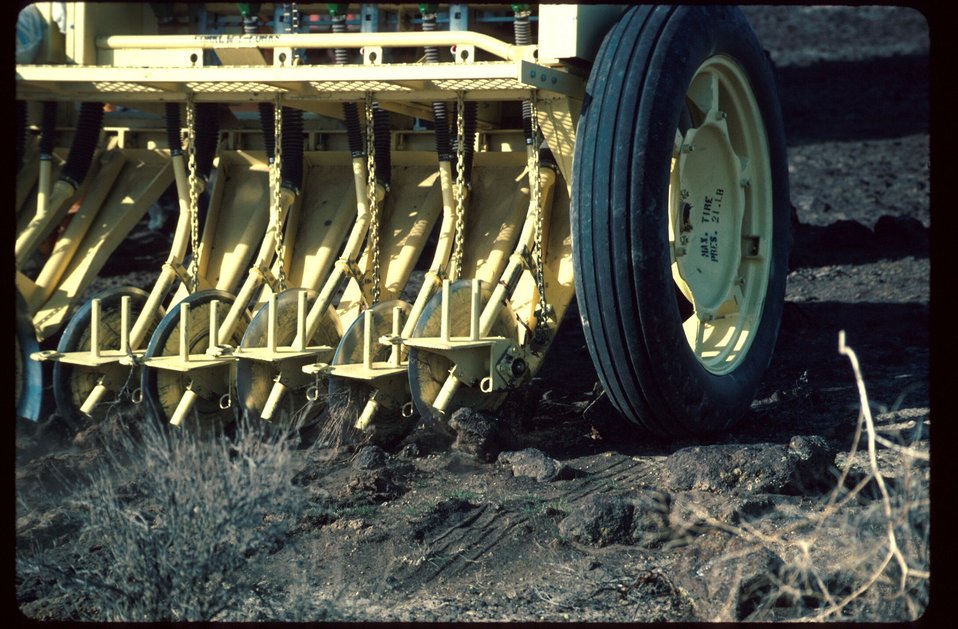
Range Restoration Project